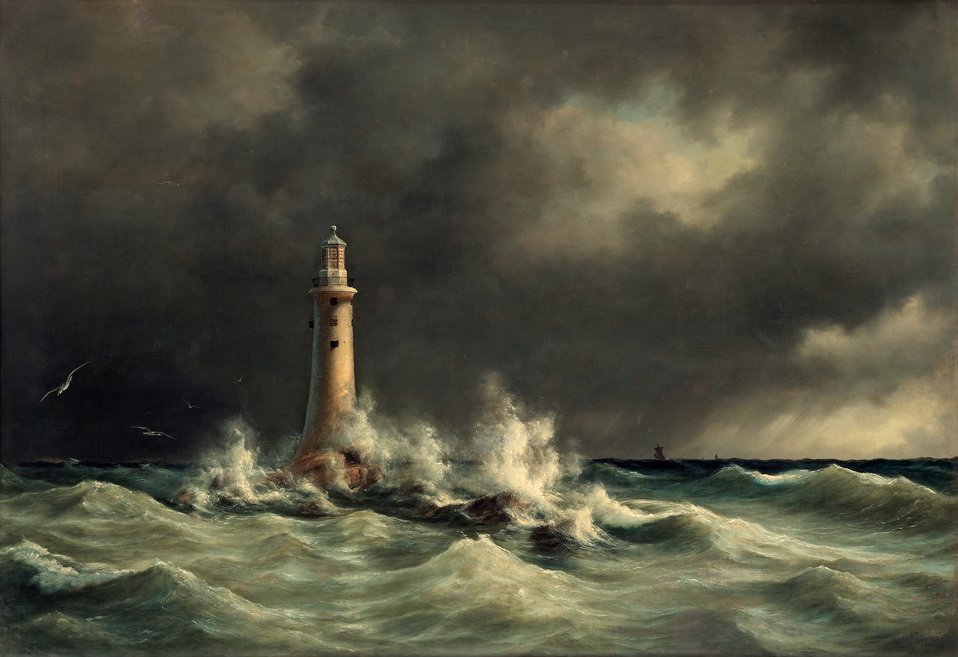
Anton Melbye - Fyrtårn for Storebælt